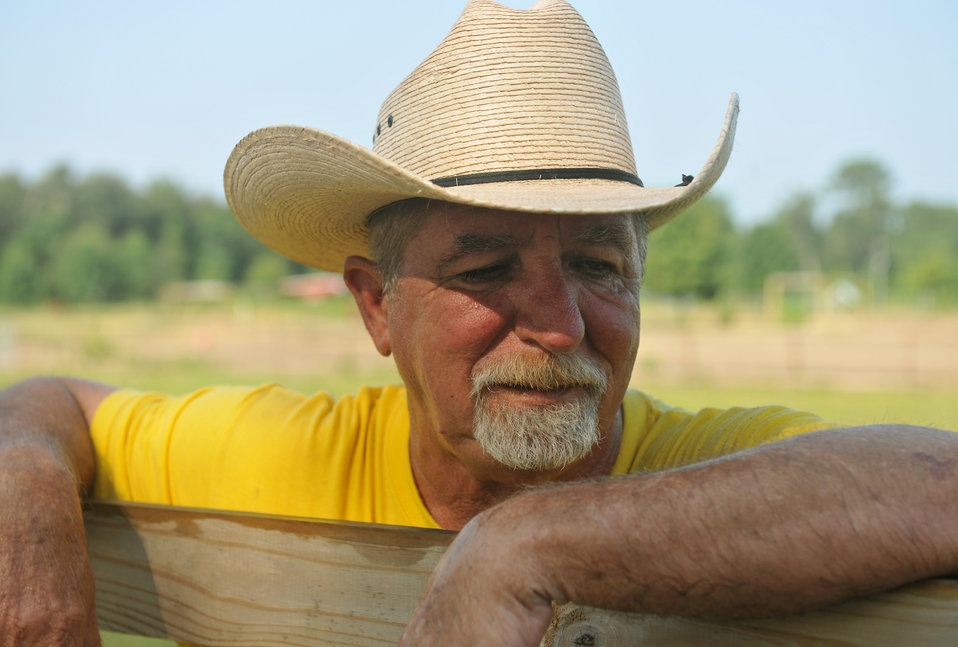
Horseback riding treats PTSD

Mike Randall takes time to reflect on the progress he and his horses have made at the Hopes and Dreams Riding Facility with individuals who have brain trauma and post-traumatic stress disorder July 31, 2010, in Quitman, Ga. The facility provides more than just horseback riding for veterans; it also offers hunting, fishing, camping and canoeing, free of charge to military members and their families. Mr. Randall is the Hopes and Dreams Riding Facility owner.